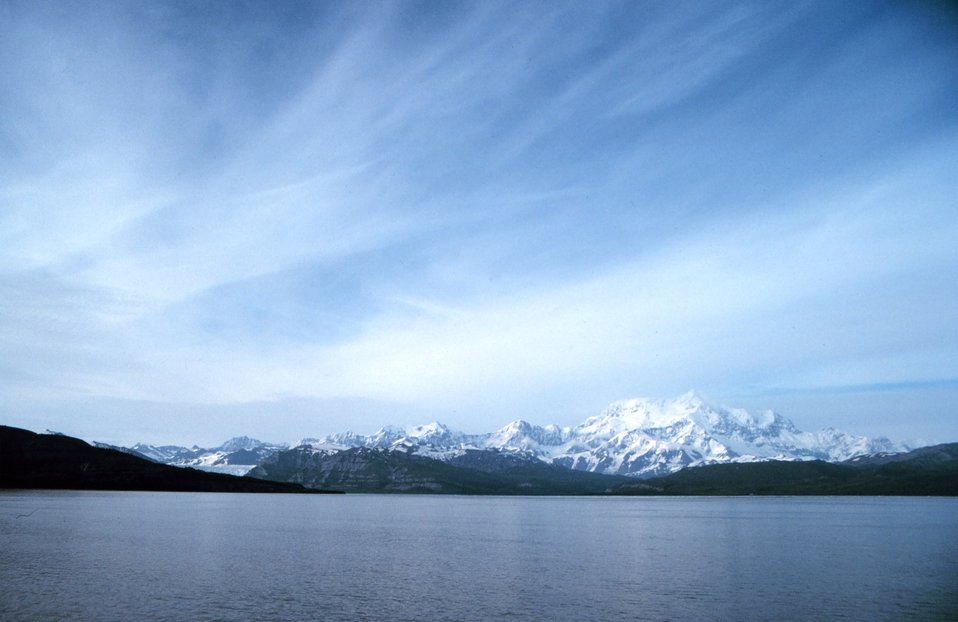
Photo #15 of Mount St. Elias sequence.